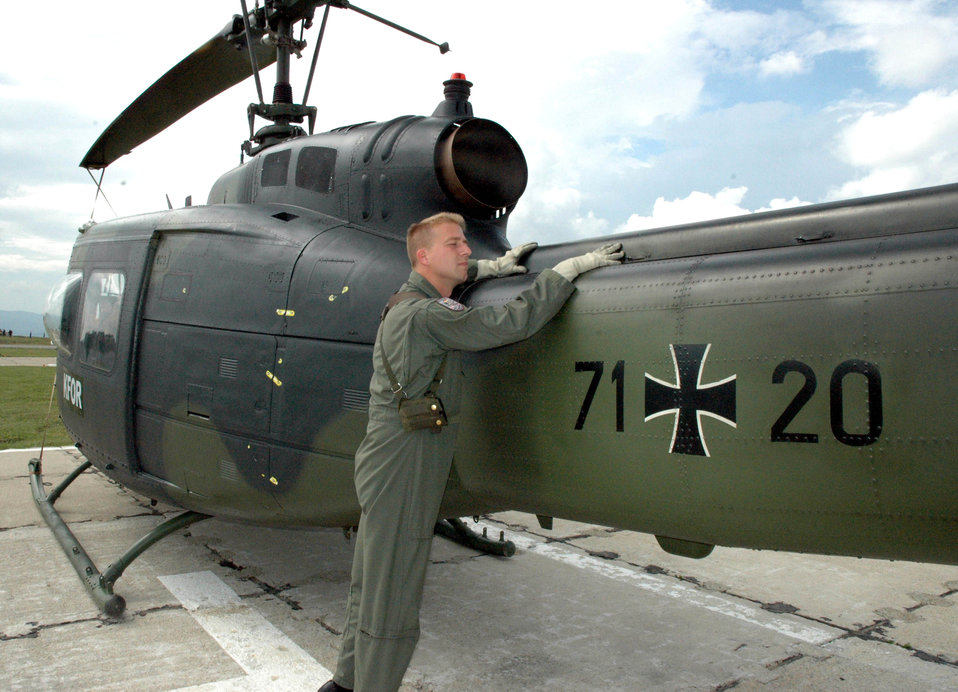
Air Force captain deployed with German helicopter unit in Kosovo

PRISTINA, Serbia and Montenegro -- Capt. Phillip Petro inspects a German UH-1D helicopter July 14 before takeoff from here. He is an exchange pilot at the Toplicane German Army Feldlager air base in the Multi-National Brigade Southwest in Kosovo. He is permanently assigned to the German Luftwaffe's 2nd Squadron at Landsberg Air Base, Germany, where he flies the German UH-1D.